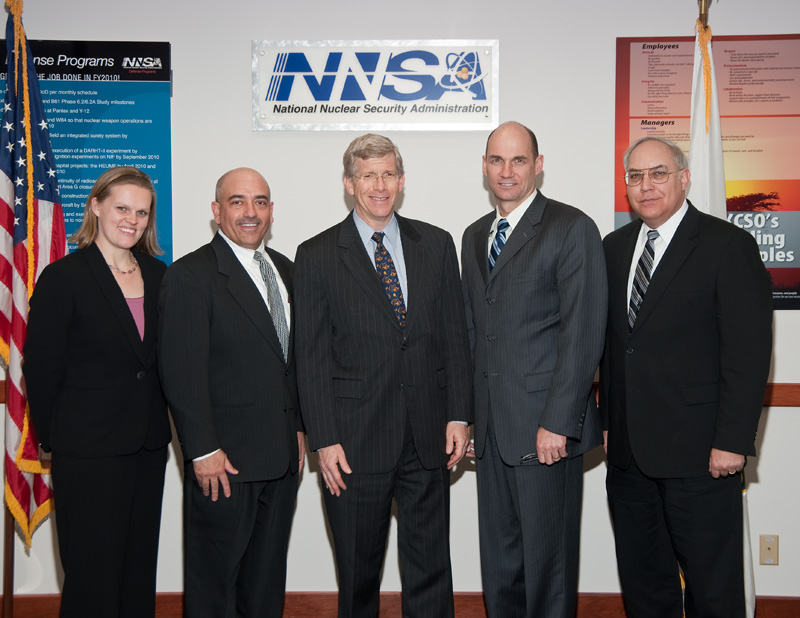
Deputy Secretary Daniel Poneman and NNSA Administrator Thomas D'Agostino with KCP leadership.